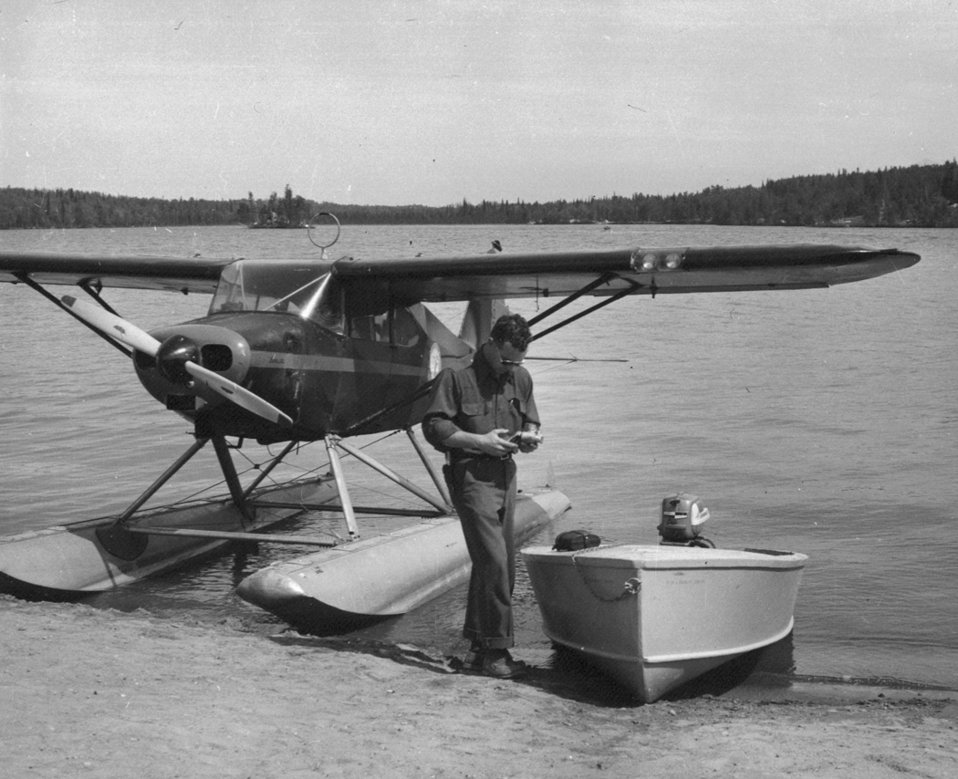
Agent Cross and float plane at Lake Louise